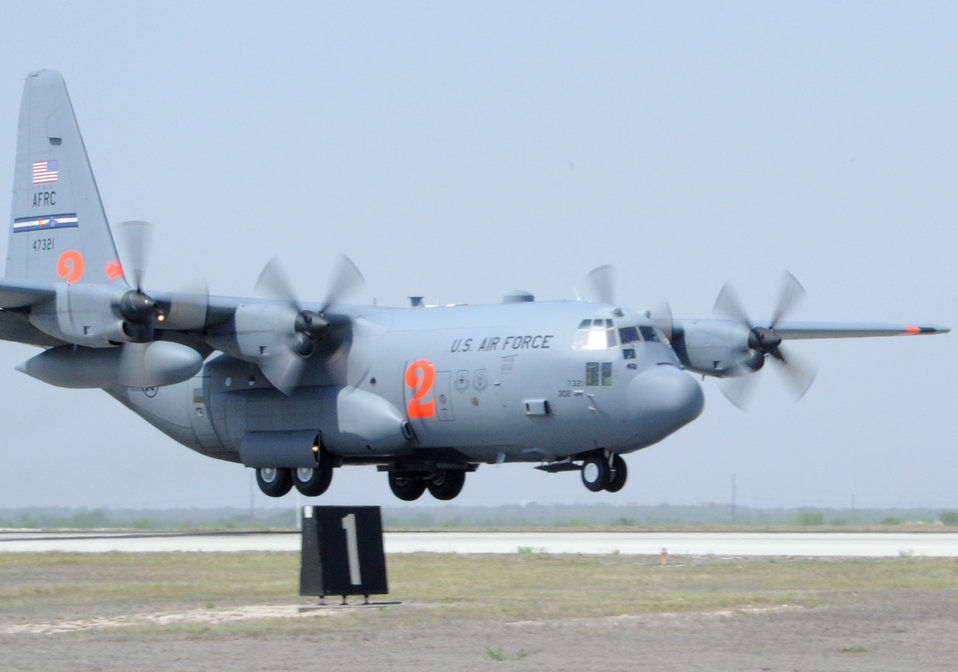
Air Force Reserve C-130s support fight against Mexican wildland fires

A C-130 Hercules, equipped with the U.S. Forest Service Modular Airborne Fire Fighting System, lands April 16, 2011, at Laughline Air Force Base, Texas. Two C-130s conducted an aerial fire fighting mission over Coahuila, Mexico. The C-130s from the 302nd AW at Peterson Air Force Base, Colo., deployed here at the direction of U.S. Northern Command to support the Mexican government's ongoing efforts against the Coahuila wildfires.